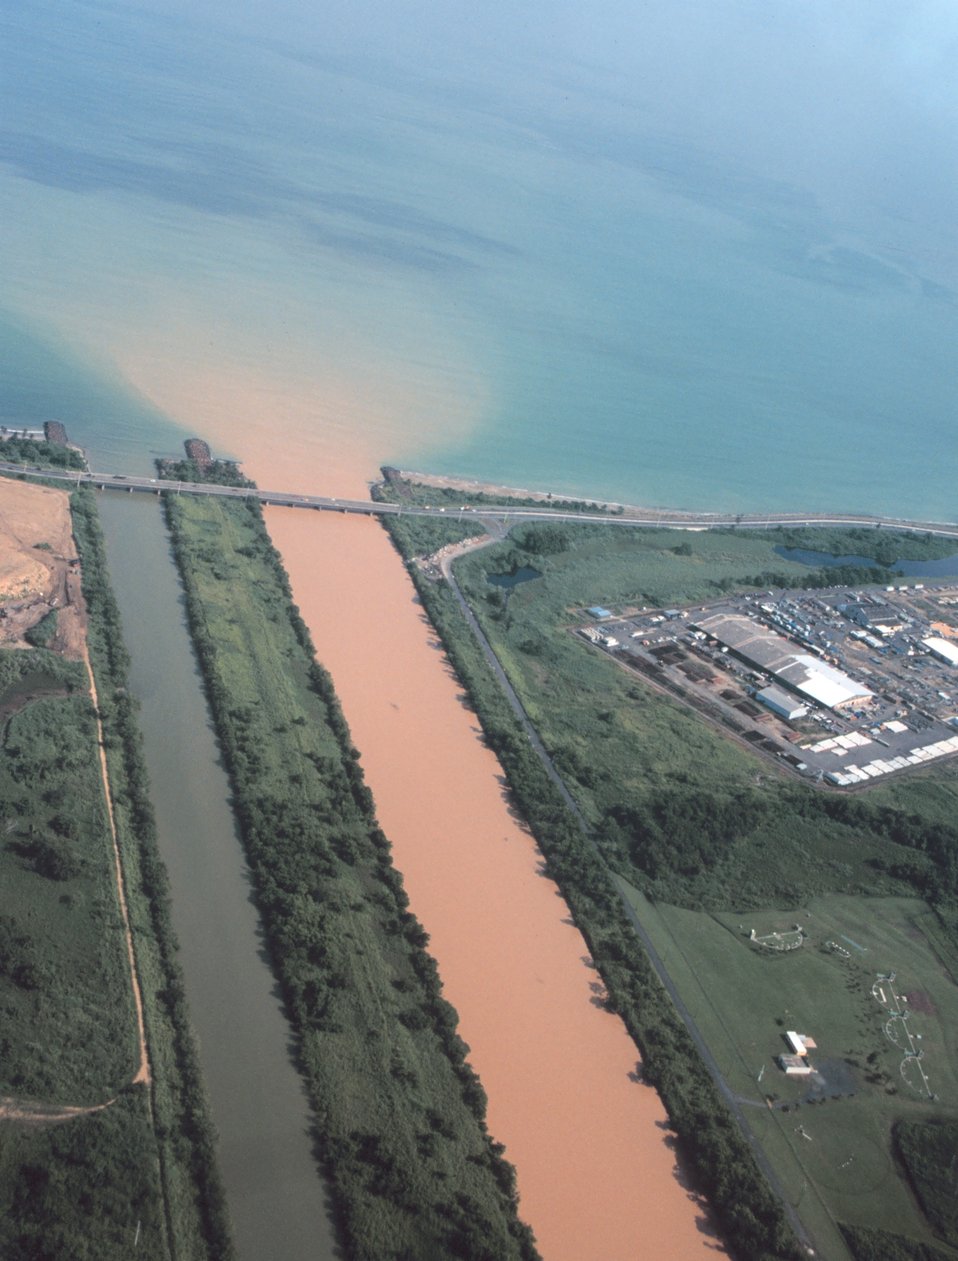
A heavily silted river enters the ocean near San Juan